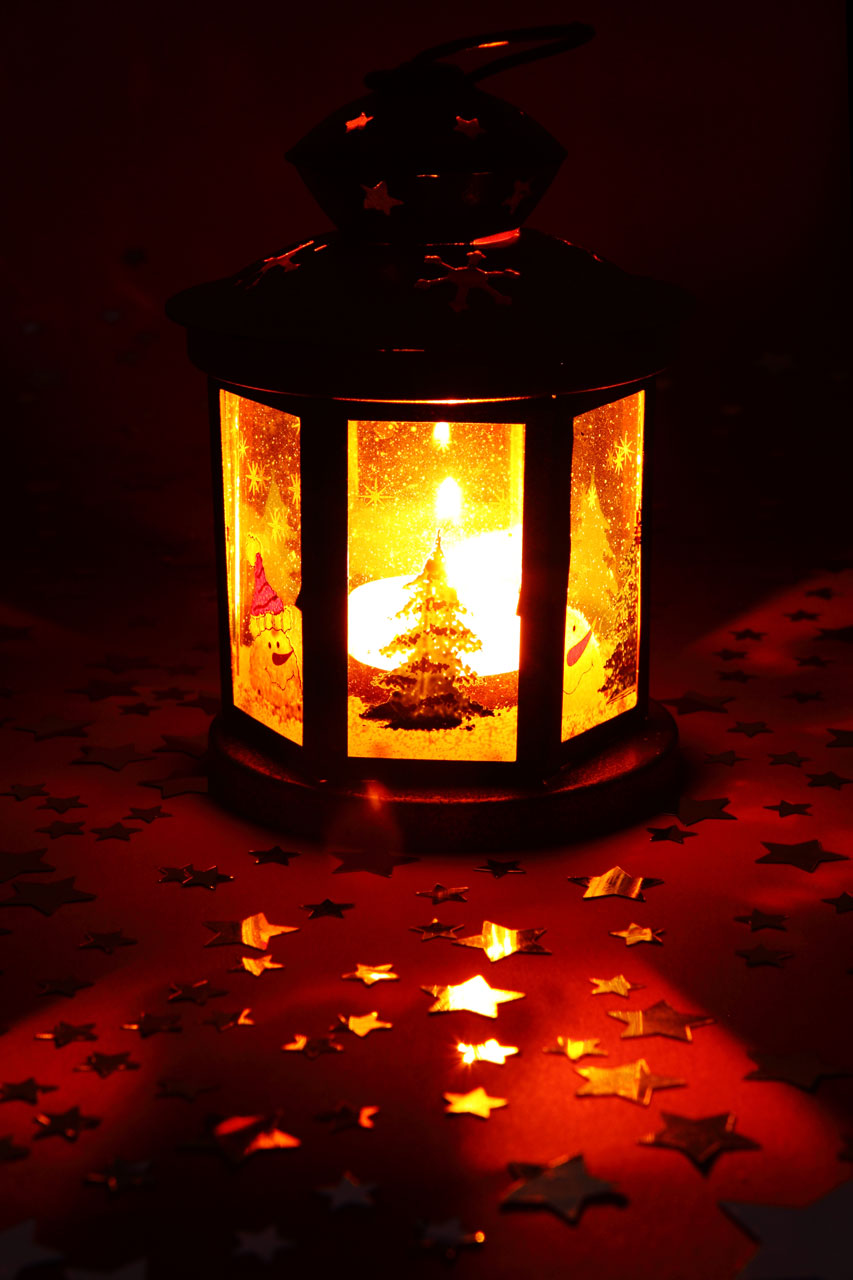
Christmas lantern glowing in dark - portrait.